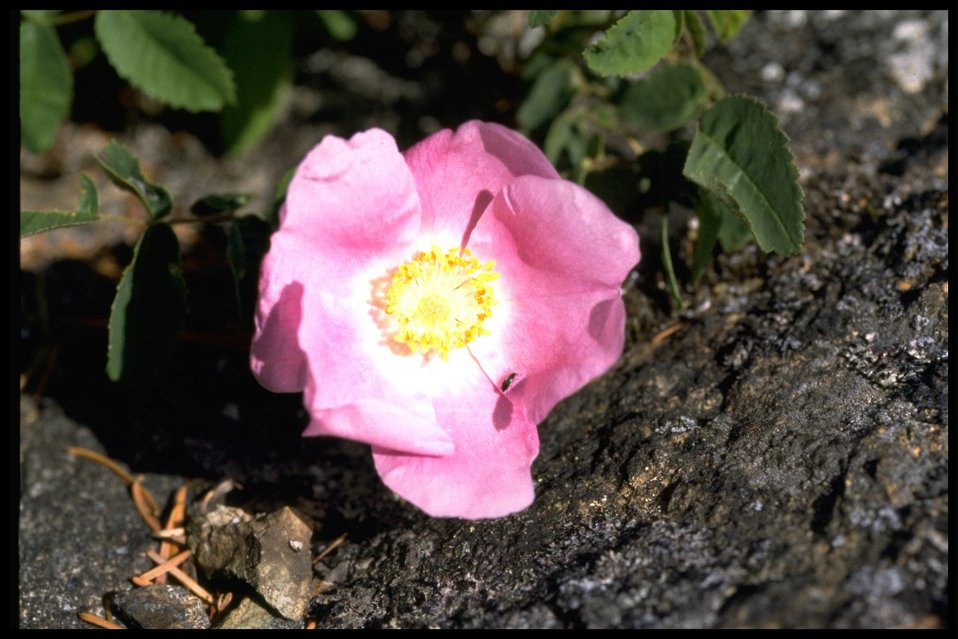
Small Pink wildflower at Point Colville.